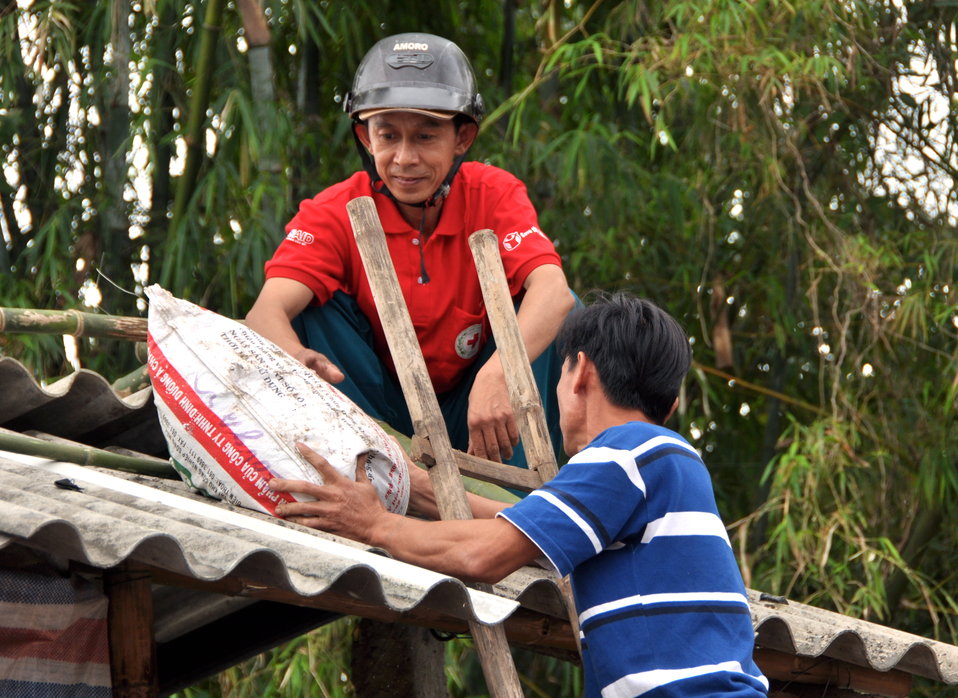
USAID and Save the Children support community evacuation drill and emergency preparedness in central Vietnam

Loc An Commune, Phu Loc District, Thua Thien Hue Province
December 4, 2012, Photo: Richard Nyberg, @USAIDVietnam